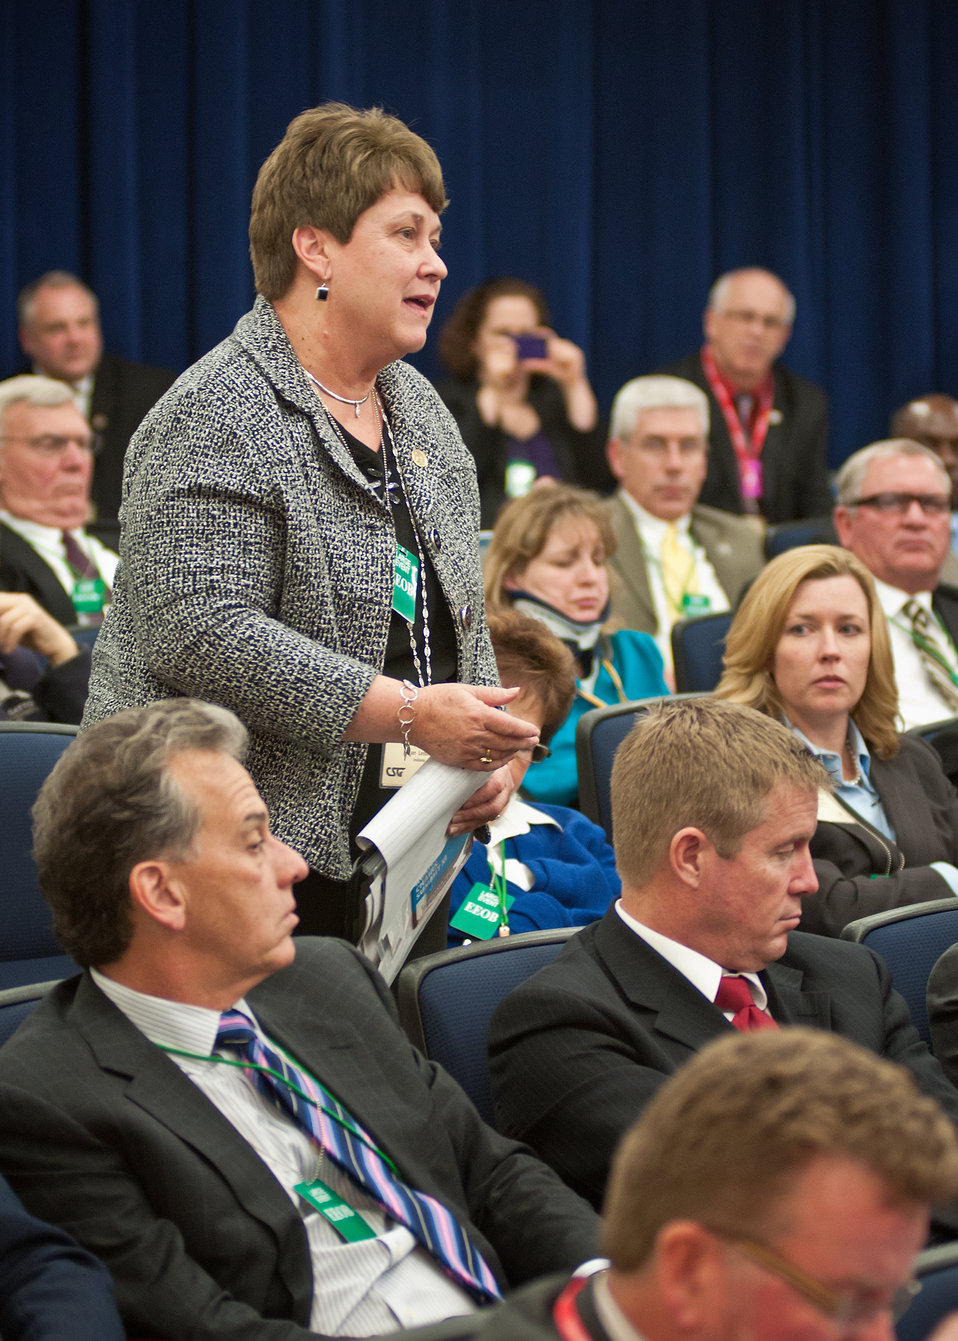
State Senator Jean Leising, Indiana poses a question at the 11th Annual Meeting of State Agriculture and Rural Leaders at the Eisenhower Executive Office Building in Washington, D.C., on Friday, January 6, 2012.